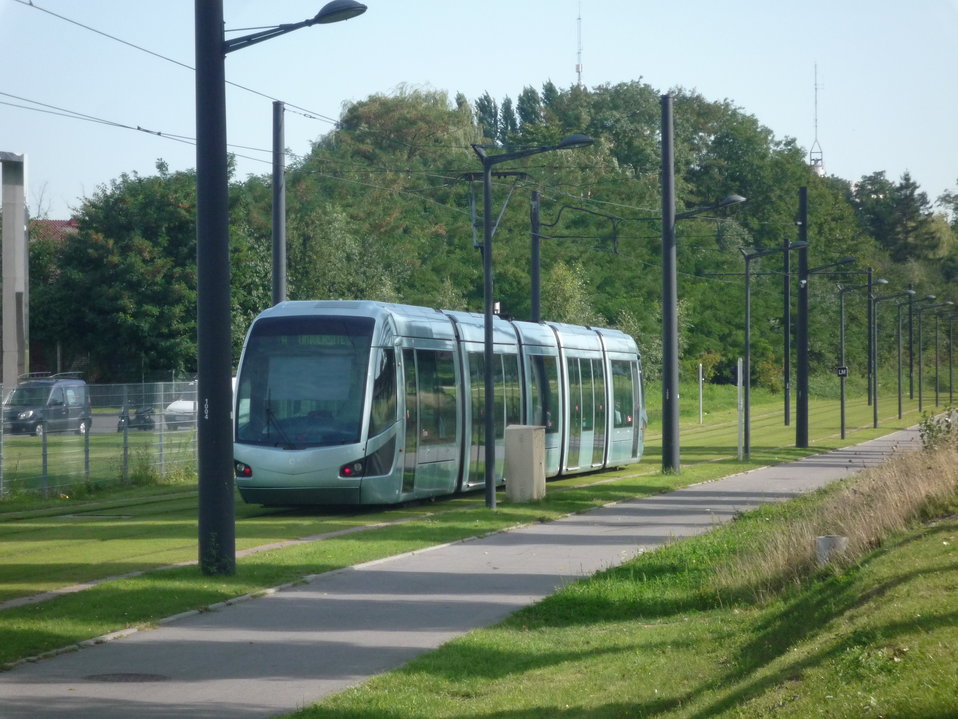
Fran√ßais†: Tramway de Valenciennes, Nord, Nord-Pas-de-Calais, France